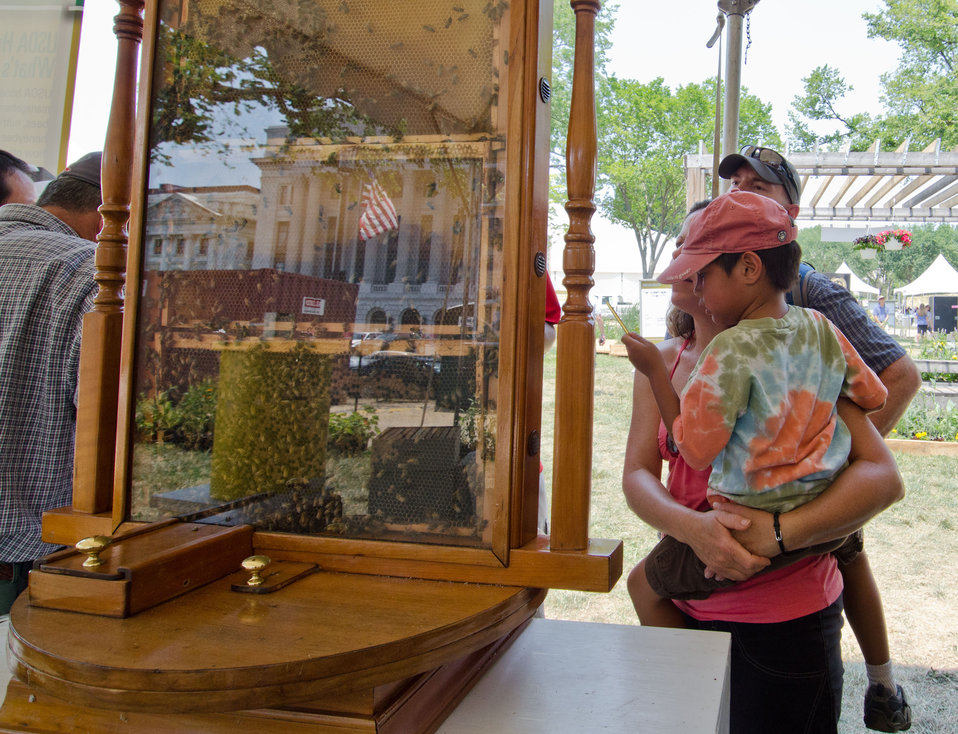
The U.S. Department of Agriculture (USDA) Bee Research Laboratory displays a live bee colony in a two-sided glass case at 2012 Smithsonian Folklife Festival, on Thursday, June 28, 2012 on the National Mall in Washington, D.C. One of the three themes this year is “Campus and Community.” It celebrates the 150 years of the USDA and the Land-Grant University System. The USDA and the Land-Grant system extend education across the country, contributing to American agriculture success and rural prosperity. “Campus and Community” has demonstrations, discussions, hands-on activities, and entertainment to that showcase the many ways that this partnership works to improve American agriculture and rural life.